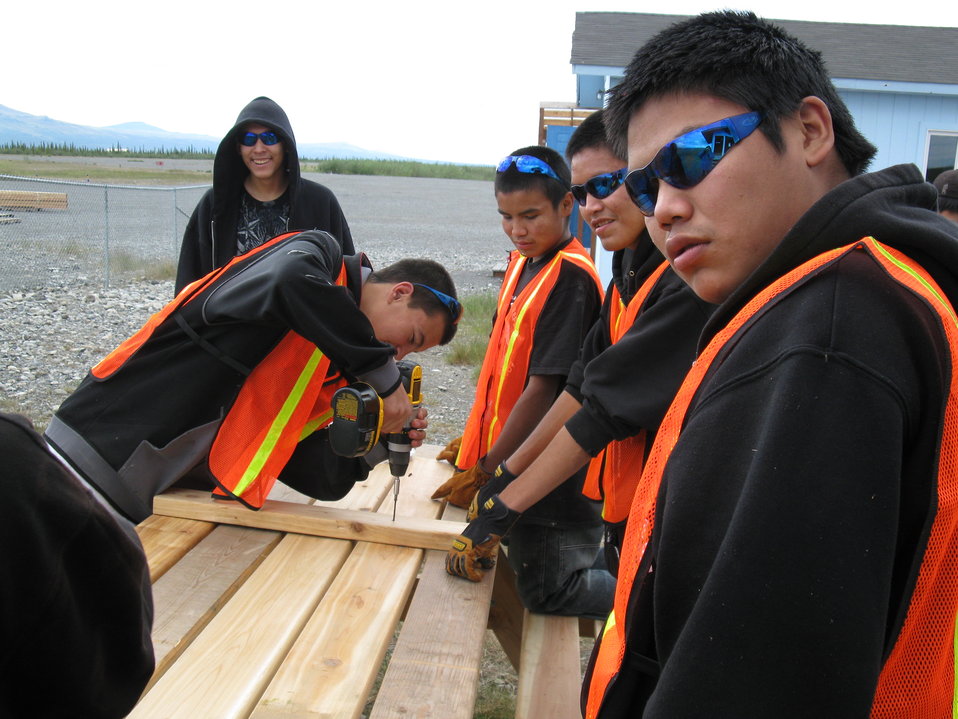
Arctic National Wildlife Refuge, AK